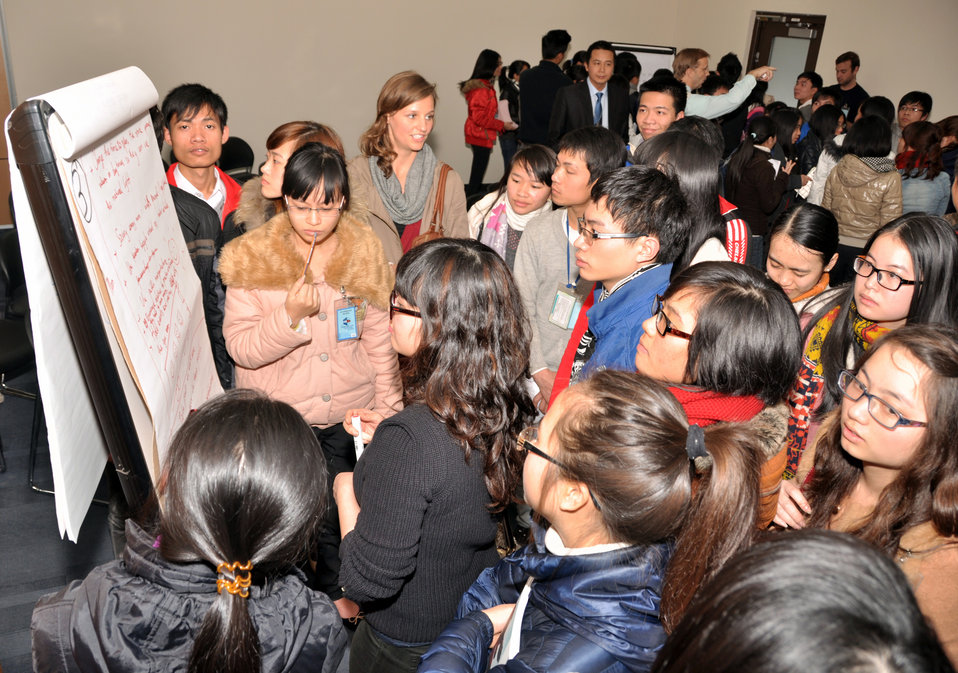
Speaker program on Climate Change and Clean Energy at the American Center

Hanoi, January 16, 2013